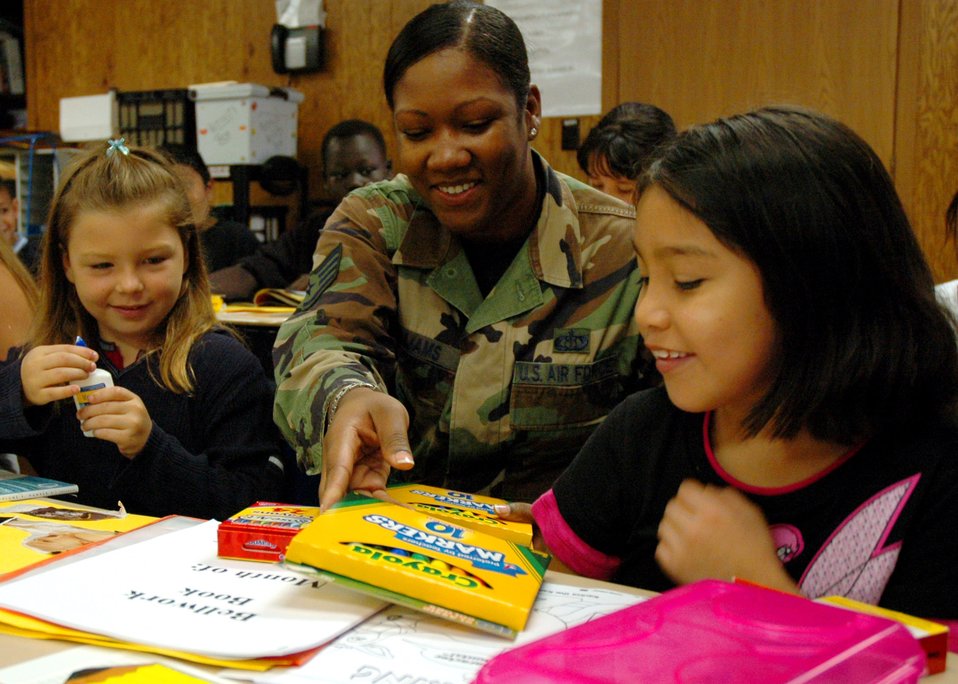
Offutt agency provides supplies to school

Staff Sgt. Kenyatta Williams helps 8-year-olds Devon Stafford (left) and Sandra Gijon with their new school supplies Aug. 23 at Indian Hill Elementary School in Omaha, Neb. An Air Force Weather Agency team collected 200 pounds of assorted school supplies and delivered them to the school's children. Sergeant Williams is the assistant NCO in charge of net-centric database management and data routing for AFWA's 2nd Systems Operations Squadron.